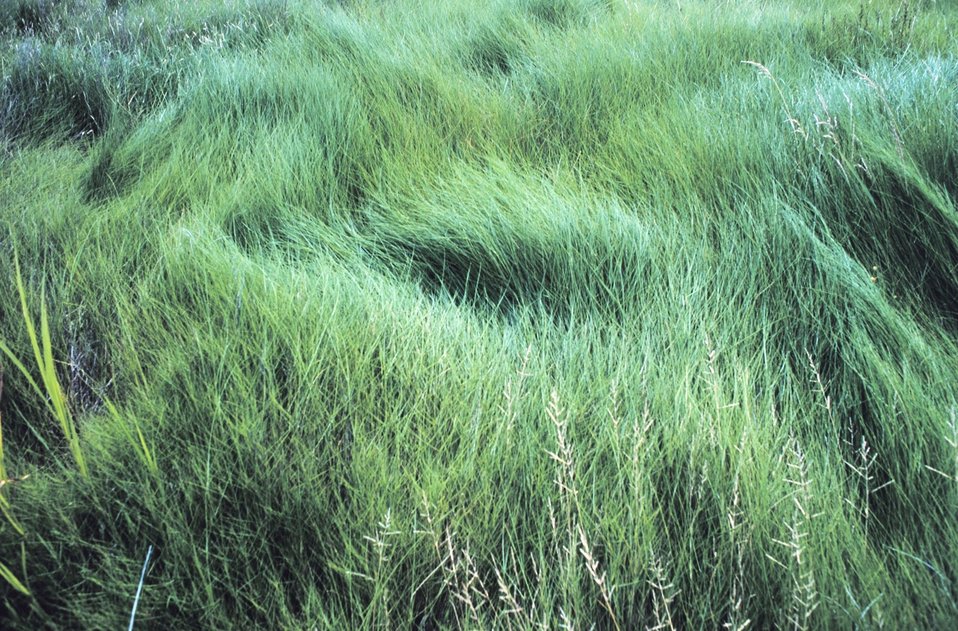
Wind patterns in the grass at the south end of Tilghman Island.